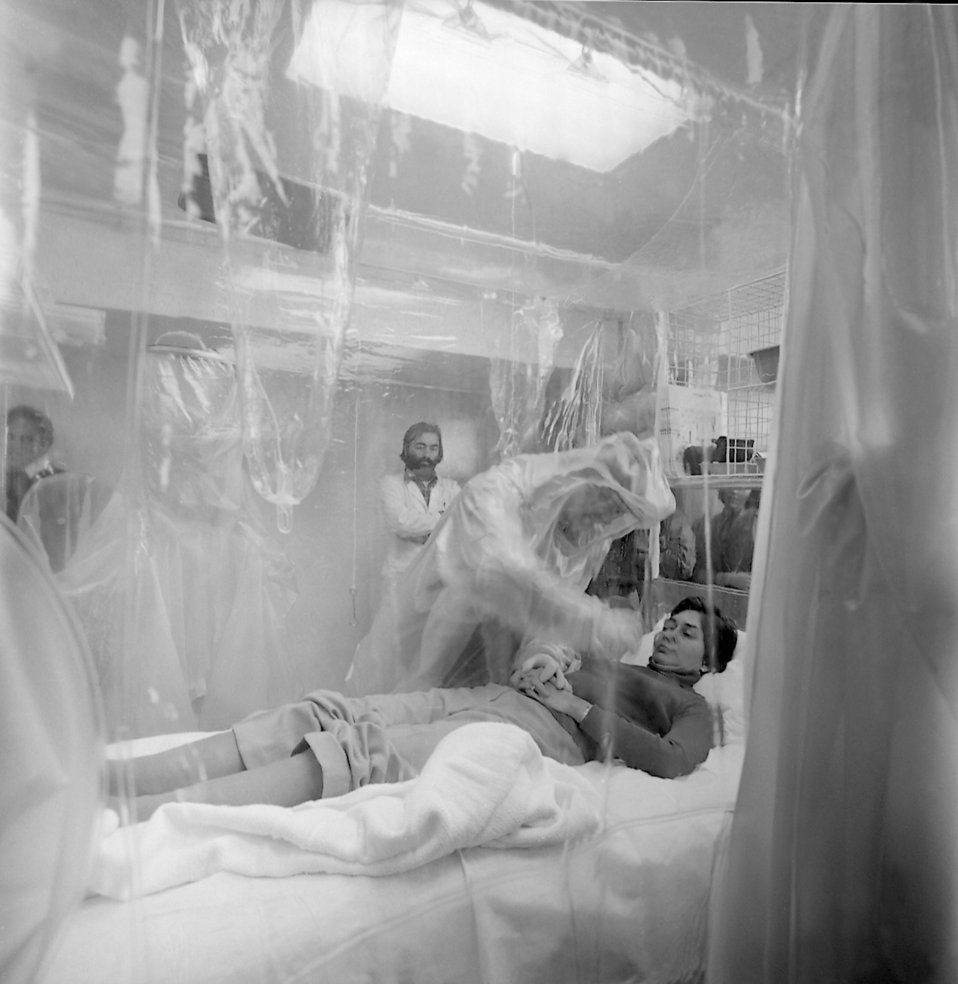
This 1981 photograph depicts a virtual patient in a Vicker's Isolation Unit.